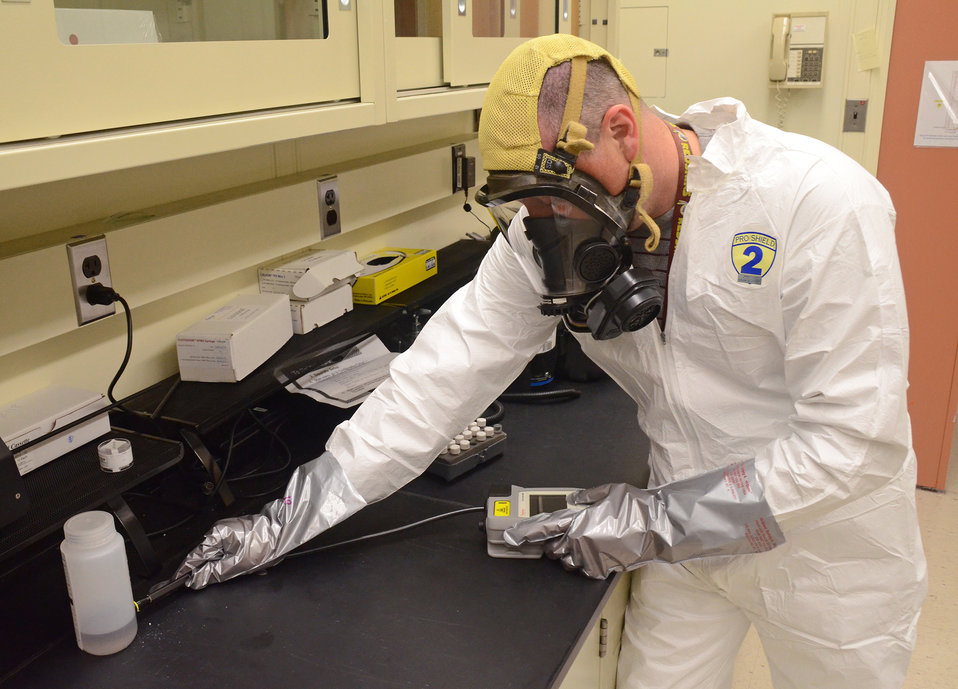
New Spectrometry Standard for Handheld Chemical Detectors Aids First Responders

Christopher Neary of the NIST Environmental Management Group demonstrates the use of a handheld raman spectrometer to determine the identity of an unknown sample.